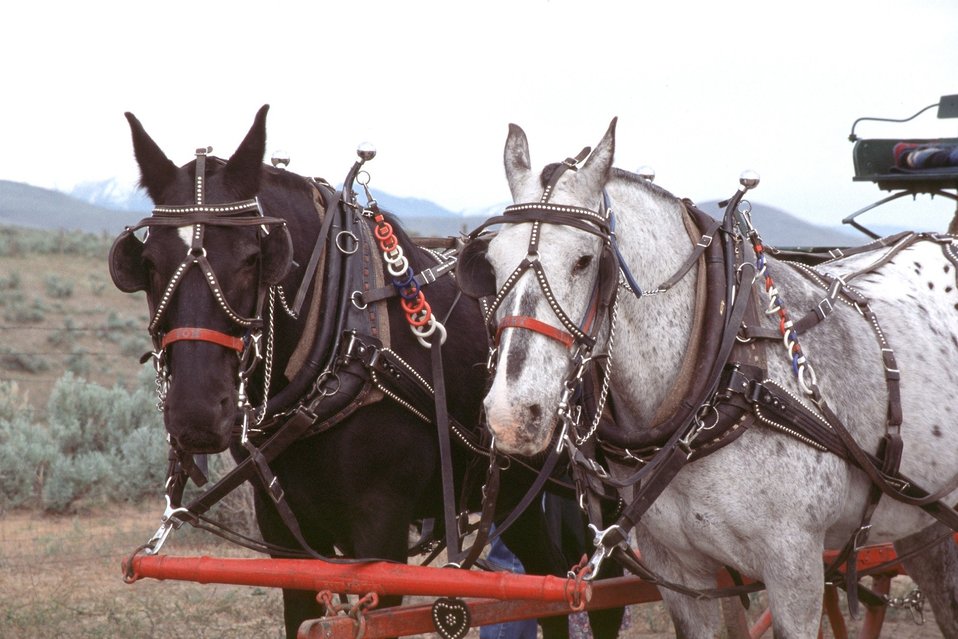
NHOTIC 10th Anniversary, wagon train reenactment. Pair of horses.